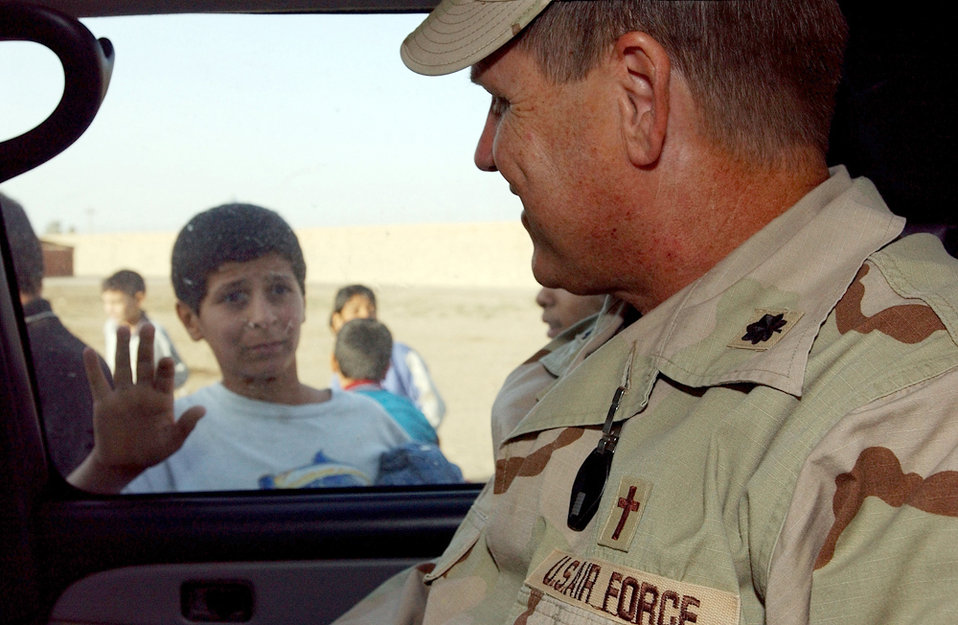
Chaplains go where needed

SOUTHWEST ASIA (AFPN) -- An Iraqi boy waves goodbye to Chaplain (Lt. Col.) Steven Keith after he delivered clothing, food and other items donated by airmen at Baghdad International Airport, Iraq. Chaplain Keith is assigned to the 447th Air Expeditionary Group.